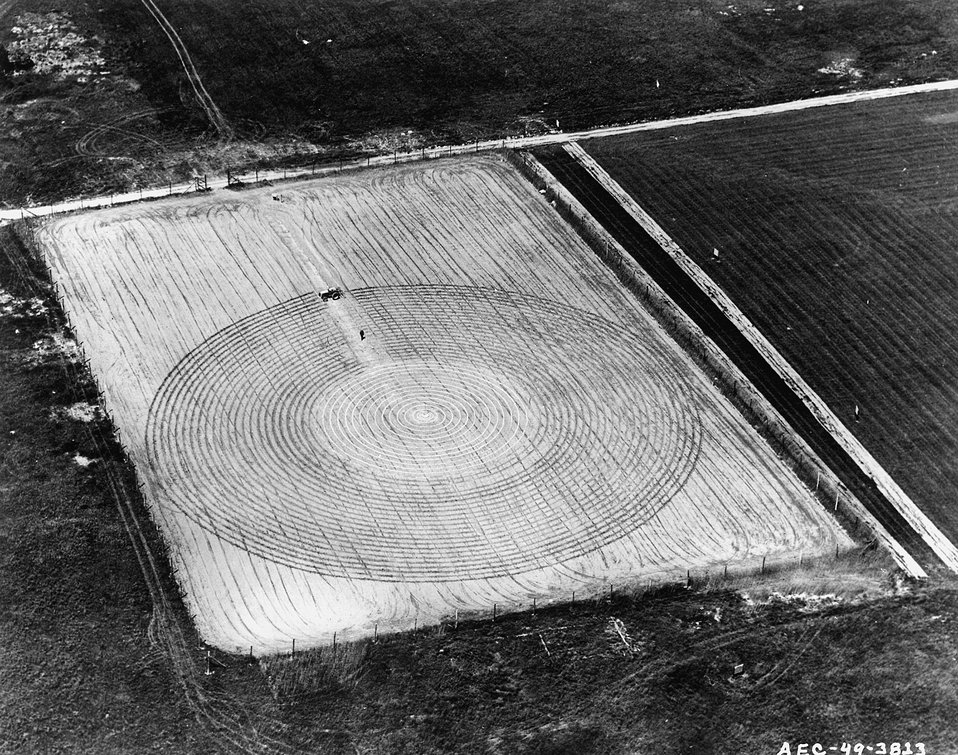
How does radiation affect plants? Brookhaven laboratory sought to answer this question by planting crops at varying distances from a source of radiation. c. 1943